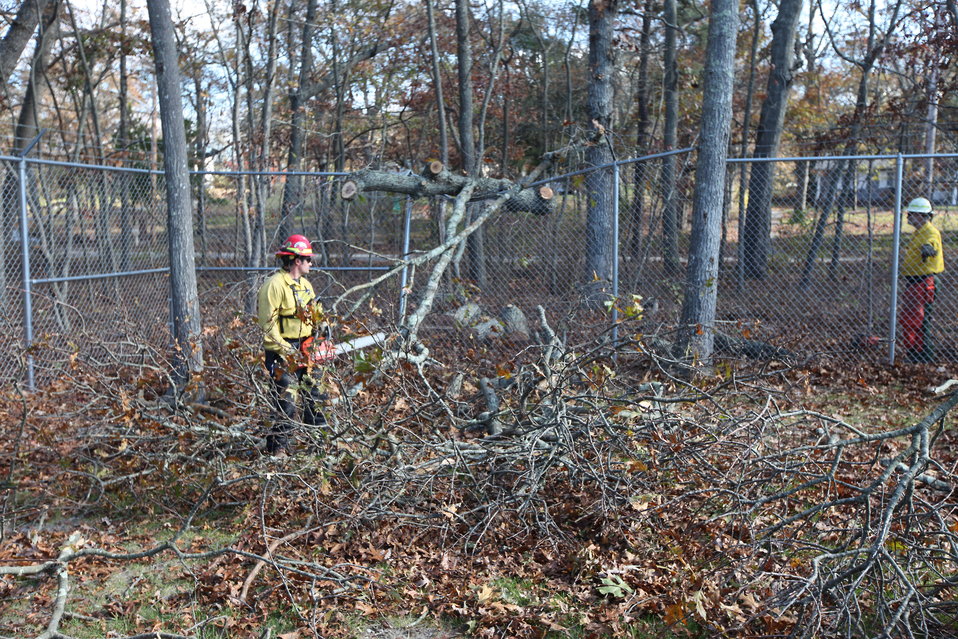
Tree work at Long Island National Wildlife Refuge Complex Headquarters (NY)

Tree work and clean up at the Long Island National Wildlife Refuge headquarters. This U.S. Fish and Wildlife Service crew is here from Massachusetts and Maine to help out.